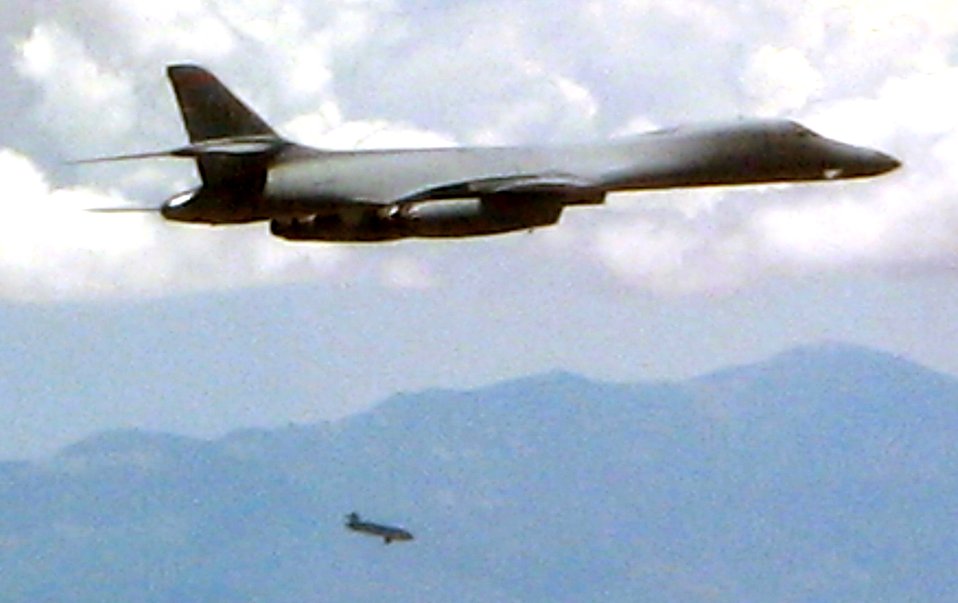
Dyess AFB demonstrates B-1B's upgrades, combat capabilities

DYESS AIR FORCE BASE, Texas -- A B-1B from the 337th Test and Evaluation Squadron here releases a Joint Air-to-Surface Standoff Missile over the White Sands Missile Range, N.M. The 7th Bomb Wing here became the first unit to achieve initial operational capability of the JASSM cruise missile Aug. 18, which means the missile is able to be used in combat operations.